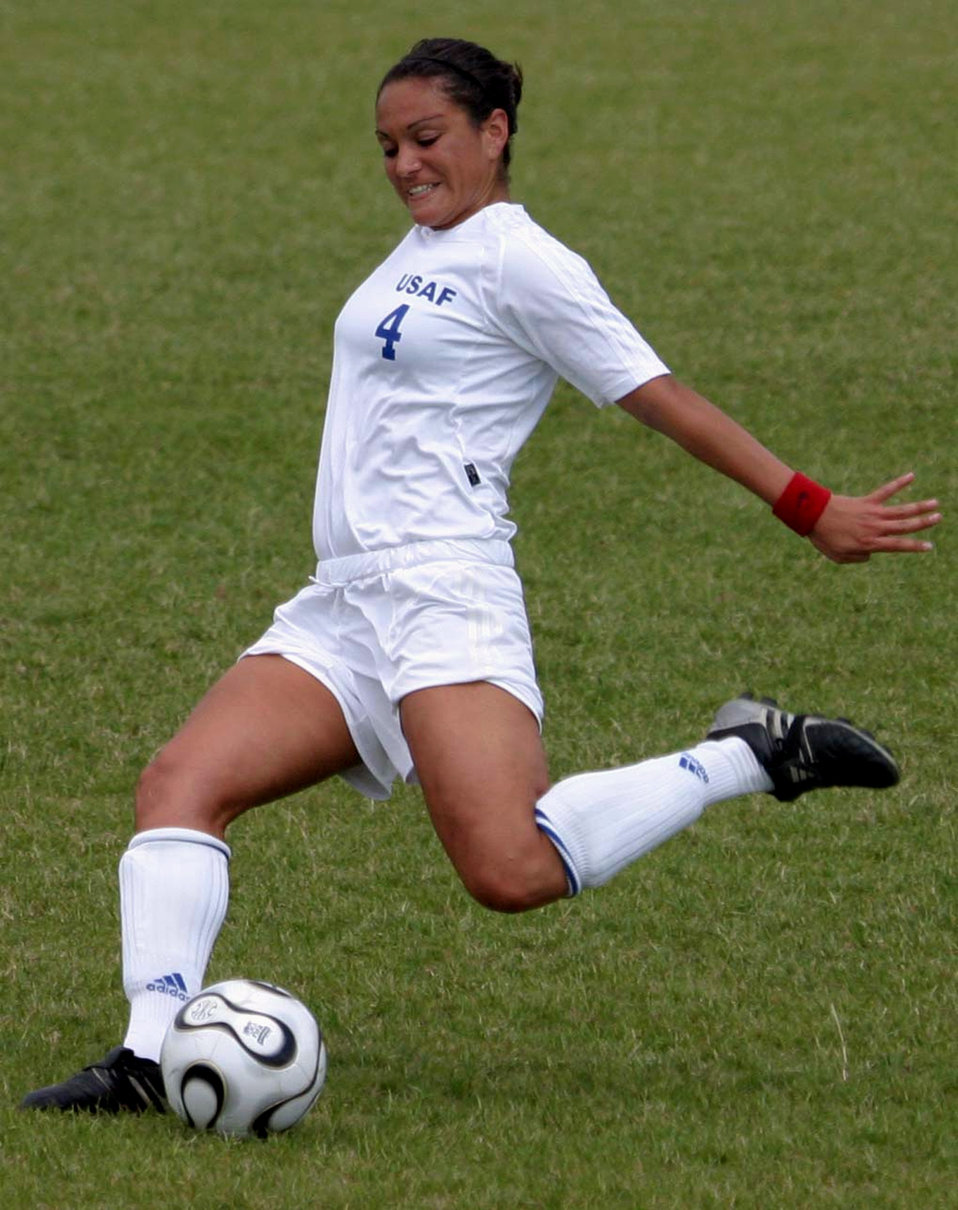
Air Force women repeat as soccer champions

Nicole Burnside was on the Air Force women's soccer team that won the 2006 armed forces women's soccer championship at Naval Station Mayport, Fla. She was also selected to the all-tournament team. She is stationed at Travis Air Force Base, Calif.